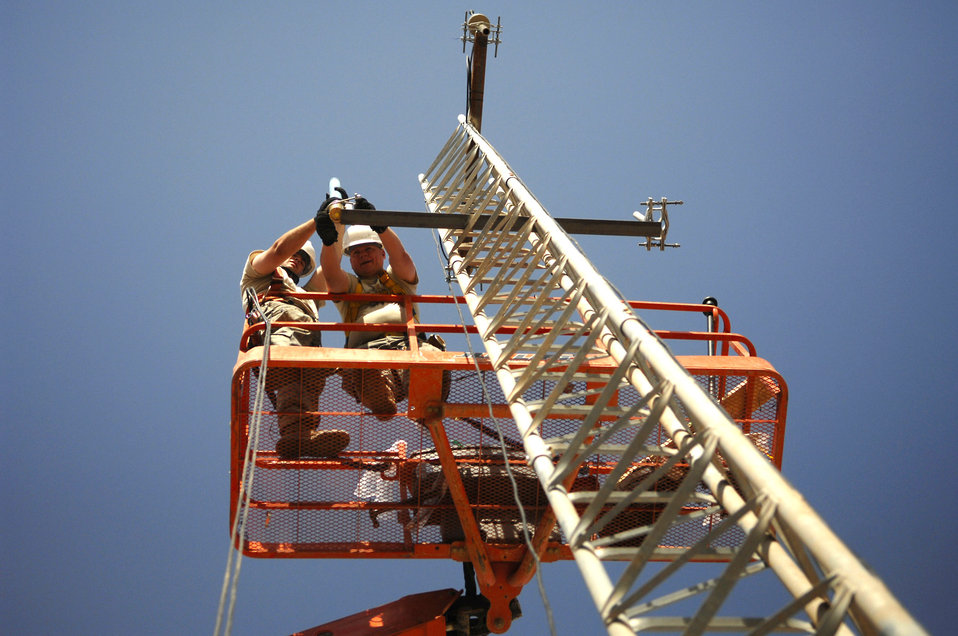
Radio up

Tech. Sgt. Robert Fisher secures a high-frequency radio antenna to a communications tower June 21 at Joint Base Balad, Iraq. Tactical and land mobile radio support is critical to ground to air communications for combat air power. Sergeant Fisher is a 332nd Expeditionary Communications Squadron ground radio maintainer deployed from Youngstown Air Reserve Base, Ohio.